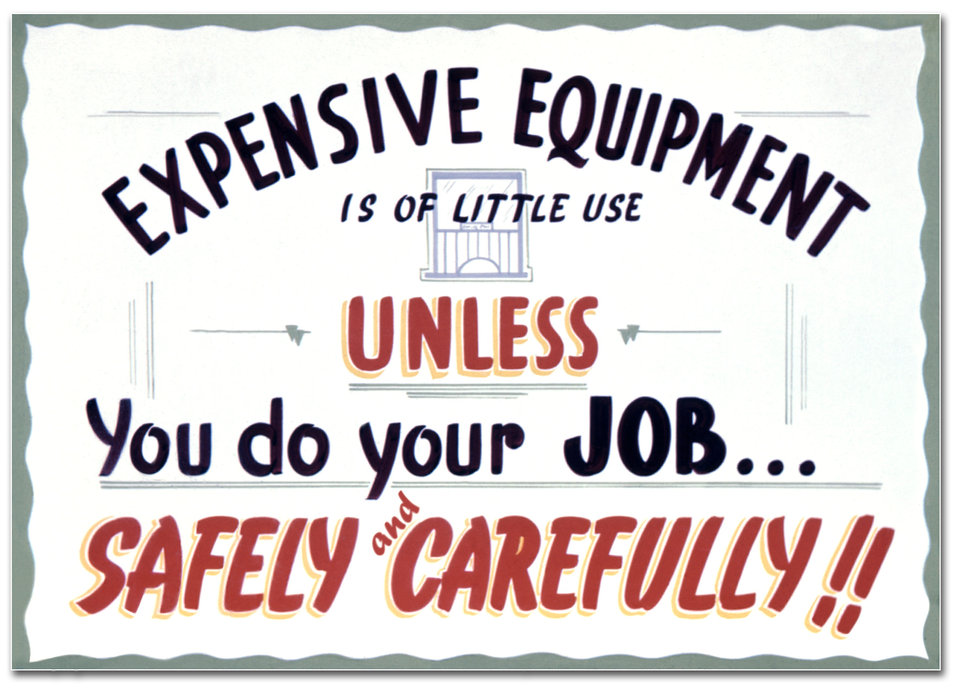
This historic sign was created by the Minnesota Department of Health in the 1930s admonishing food service workers to be aware that safe food preparation, depended on them to practice hygienic behavior, no matter what equipment was employed. It was part of a campaign to reduce food-borne illnesses.